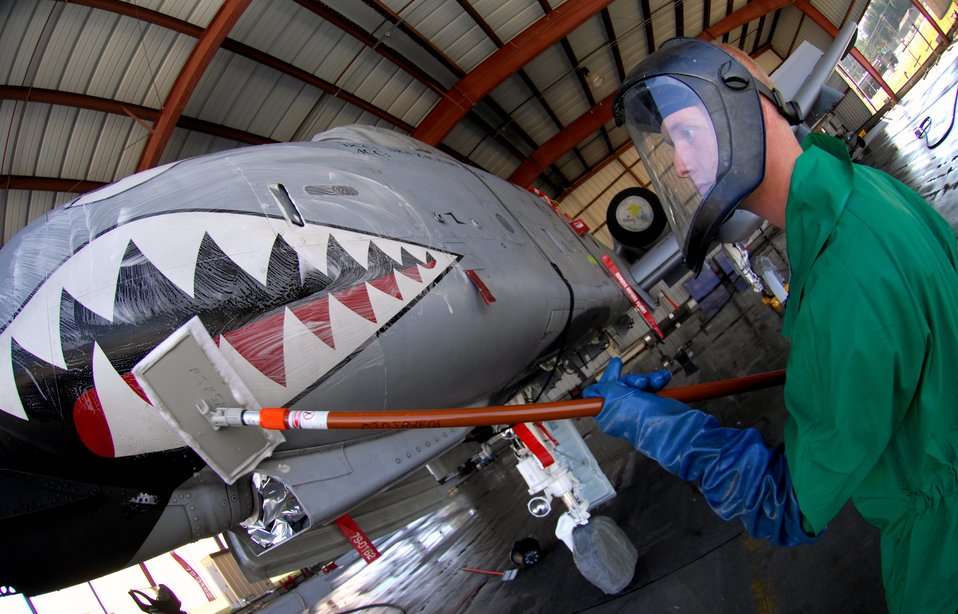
Tooth brush

Airman 1st Class Joshua Norris washes an A-10 Thunderbolt II Nov.19 at the corrosion control wash rack at Moody Air Force Base, Ga. The A-10 receives a thorough wash-down and lubrication every three months to prevent corrosion and to inspect for surface damage. Airman Norris is a 23rd Aircraft Maintenance Squadron A-10 crew chief.